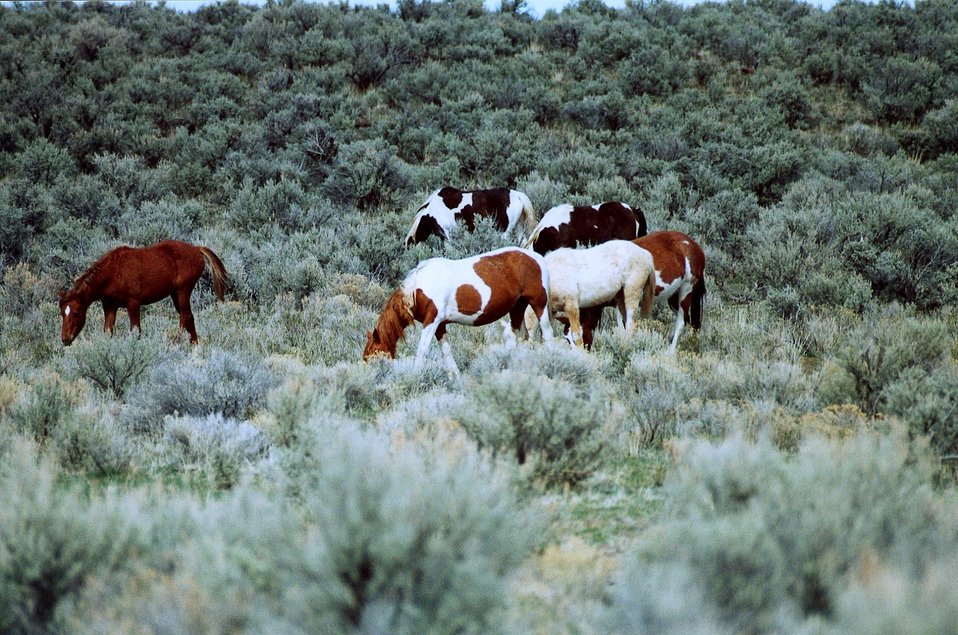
Medium shot of bachelor stallions grazing.